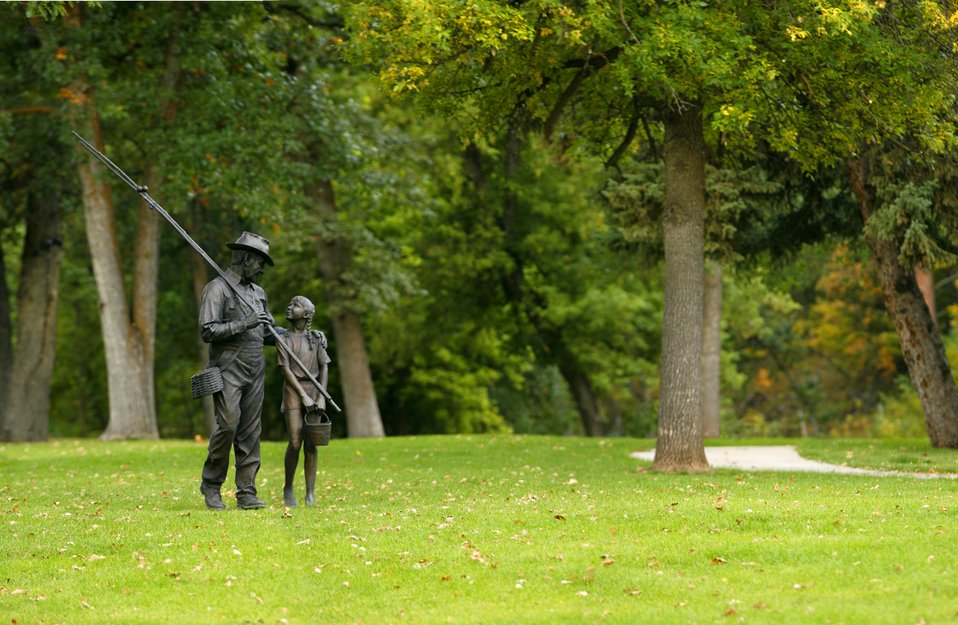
DC Booth Historic National Fish Hatchery

Generations statue at D.C. Booth.